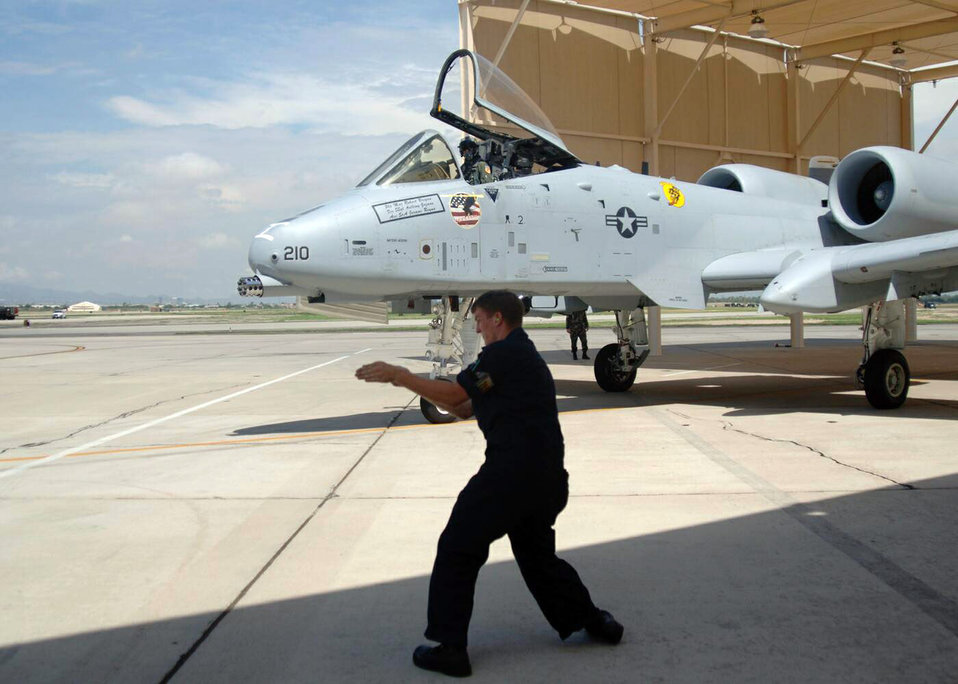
Thunderbolt takeoff

DAVIS-MONTHAN AIR FORCE BASE, Ariz. -- Airman 1st Class Tyler Young waves on Maj. Rob Brogan as he prepares for takeoff in an A-10 Thunderbolt II. Major Brogan is a West Coast demonstration team pilot assigned to the 355th Operations Group here. Airman Young is assigned to the 355th Aircraft Maintenance Squadron.